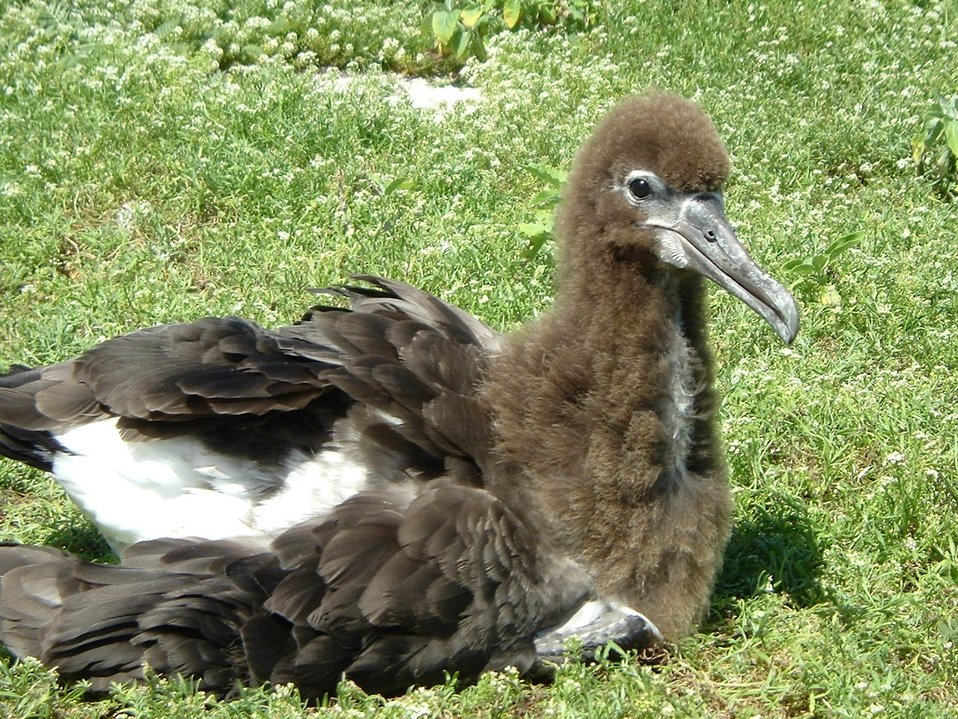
Albatross chick.